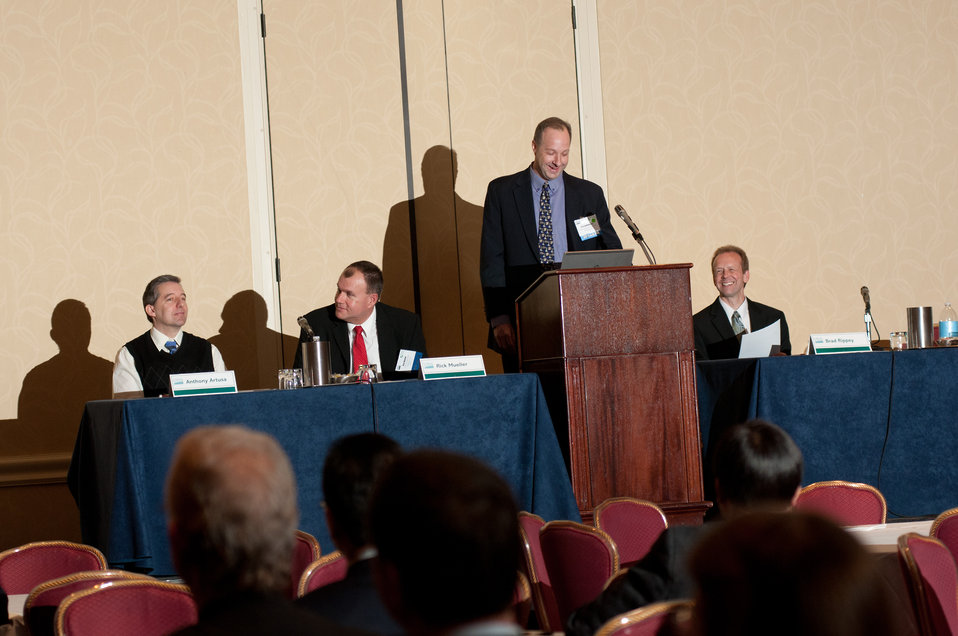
The U.S. Department of Agriculture (USDA) Office of the Chief Economist (OCE),Agricultural Meteorologist Eric Luebehusen, presented the 2012 Weather Review , during the 2013 Agricultural Outlook Forum was held at the Crystal Gateway Marriott Hotel in Arlington, VA on Friday, Feb. 22, 2013. The breakout session is generally focused on the Weather Outlook for 2013. The presentation is available at www.usda.gov/oce/forum/presentations/Rippey2.ppt.